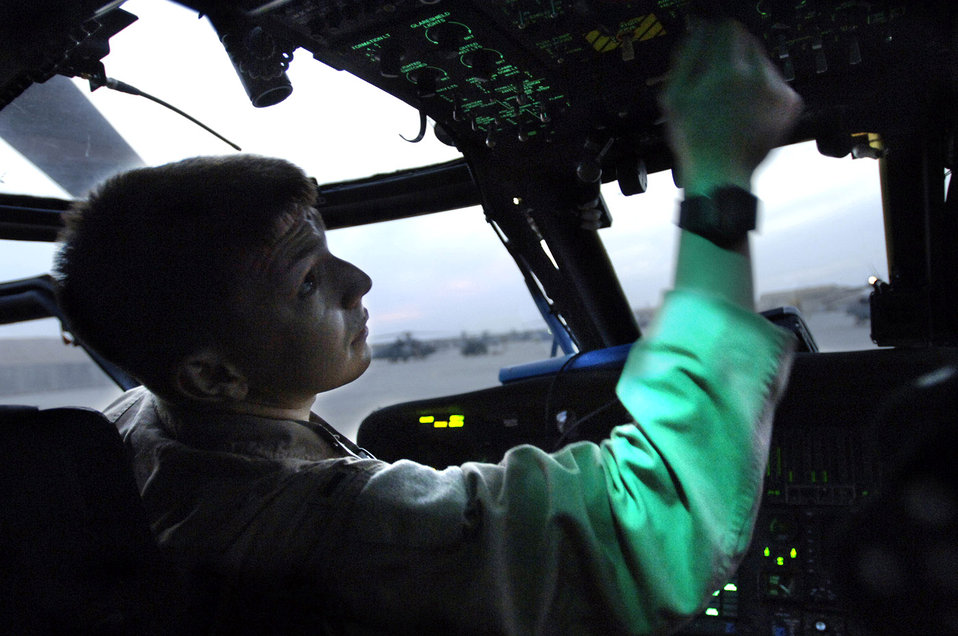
Pararescue Airmen mission ready for search, rescue

Co-pilot 1st Lt. John Mosier, performs preflight inpsection on an HH-60G Pave Hawk Feb. 24. He's about to engage in a combat search and rescue mission outside Balad Air Base, Iraq. Accompanied by hard-charging pararescue jumpers, the helicopter aircrew practice hoisting, repelling and evasive maneuvering techniques to stay proficient.